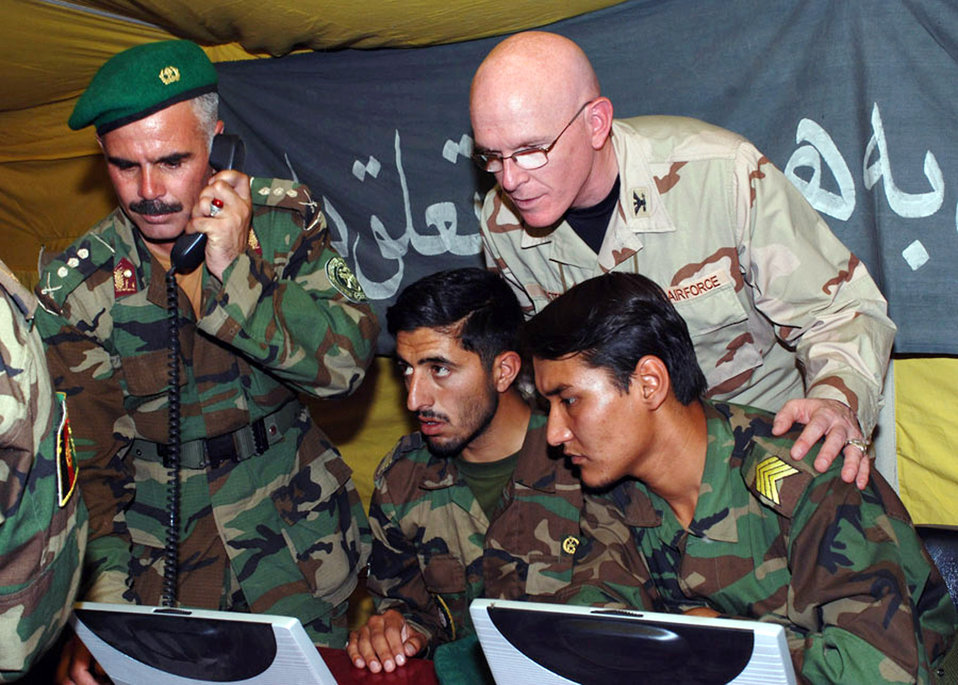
Afghan conference addresses communications issues

Col. Christopher Cotts watches while two Afghan soldiers demonstrate field connectivity to the Internet during the Afghan National Army's communications conference in Kabul, Afghanistan. Colonel Cotts is director of communications for the Combined Security Transition Command-Afghanistan.